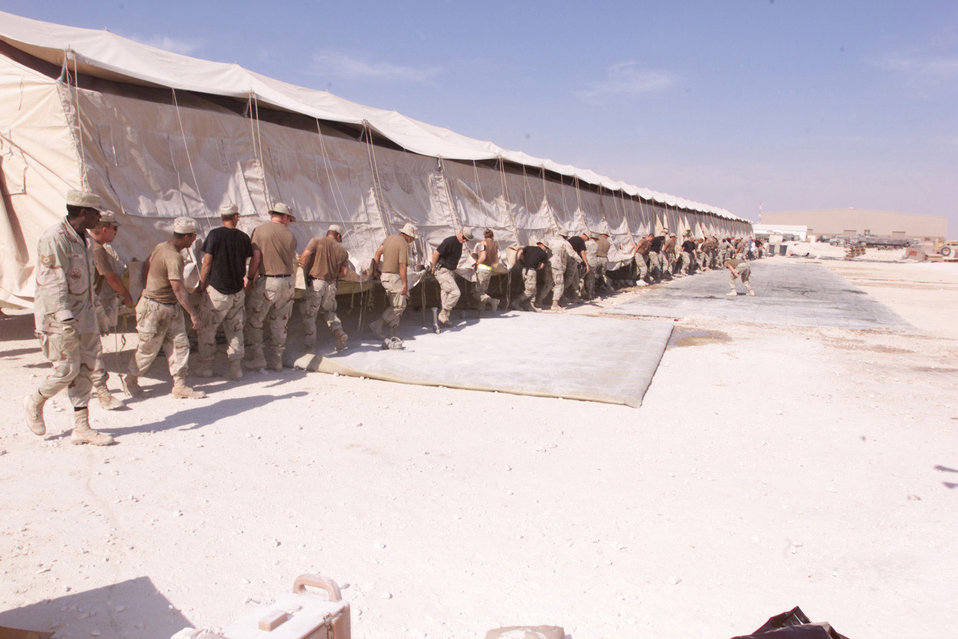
Moving chow hall

OPERATION ENDURING FREEDOM -- Airmen from the 366th Air Expeditionary Group pick up and move a mobile kitchen tent to its new resting place at an Operation Enduring Freedom location Dec. 28. The facility had been on sand and planking and is now on concrete which will provide a more stable structure.